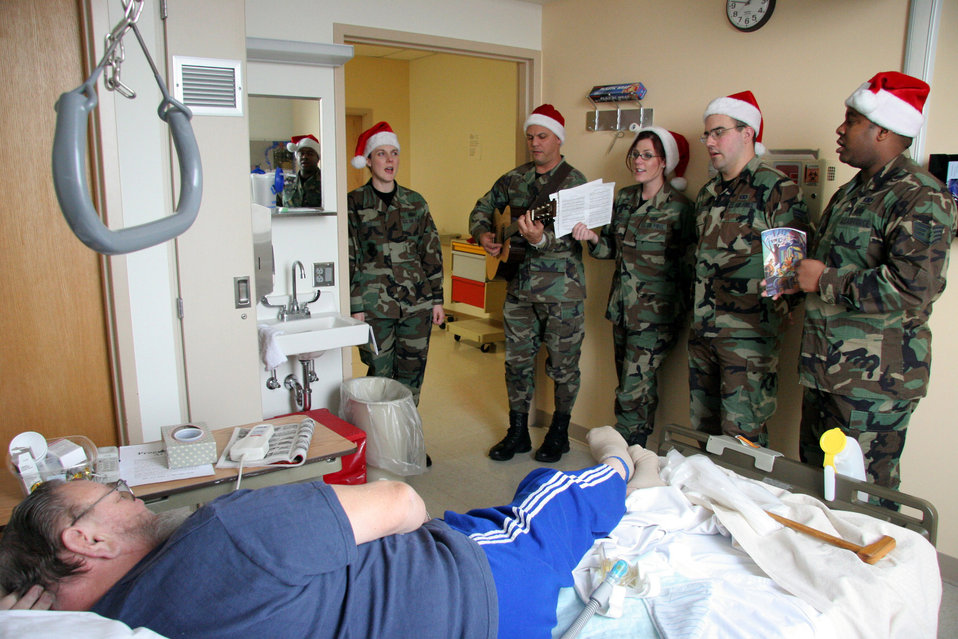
Here we go caroling...

PORTLAND, Ore. (AFPN) -- (From left) Staff Sgt. Paula Goetz, Tech. Sgt. Gary Rosenak, Senior Airman Bonnie Ramsey, Senior Airman Micah Blouin and Staff Sgt. Ronicle Ellison sing Christmas Carols patients at the Portland Veterans Affairs hospital. The singing Airmen are with the Air Force Band of the Golden West.